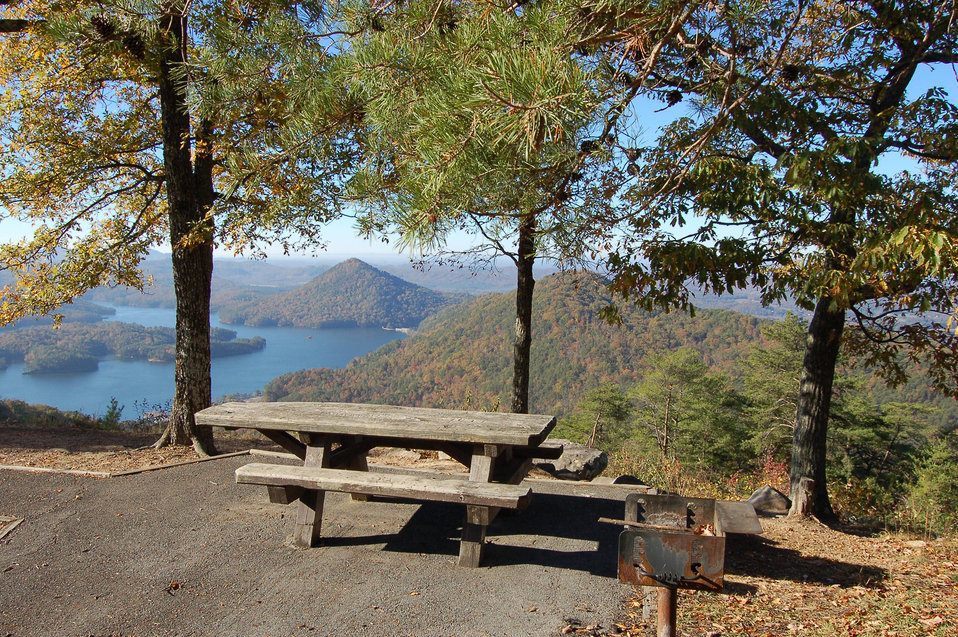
A scenic overlook in the Chilhowee National Forest in Price, UT. The U.S. Forest Service (FS) has a Forest Service 2012 Fall Colors Website and a toll-free Fall Colors Hotline at 1-800-354-4595 that will help visitors plan their trip to catch the colors at their peaks.